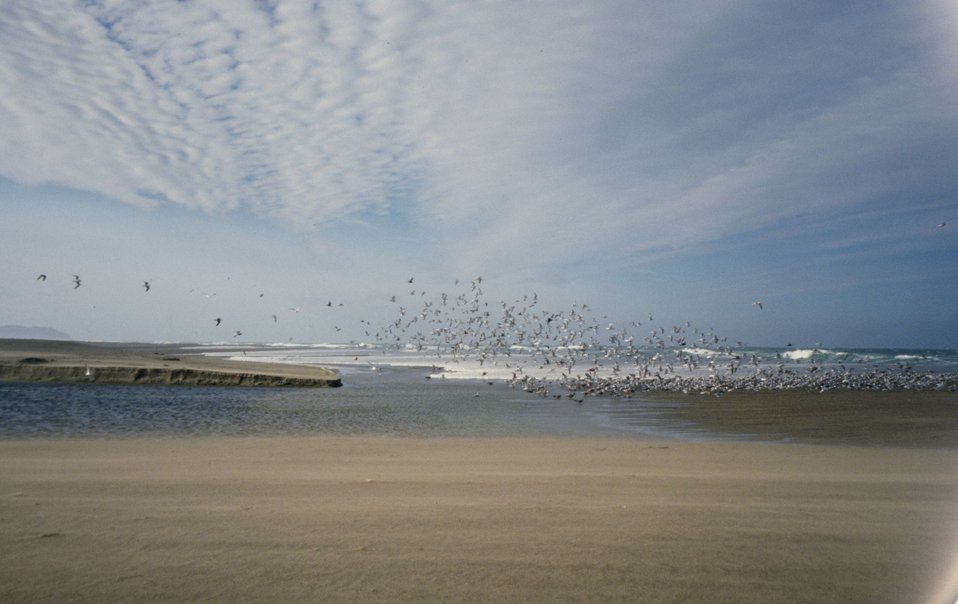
Point Reyes Great Beach